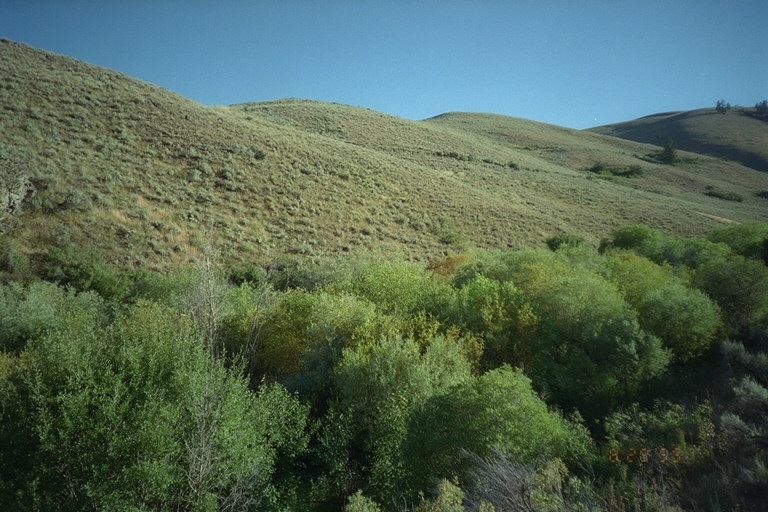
Riparian area Public Lands Salmon Field Office UCSC Upper Columbia Salmon Clearwater District